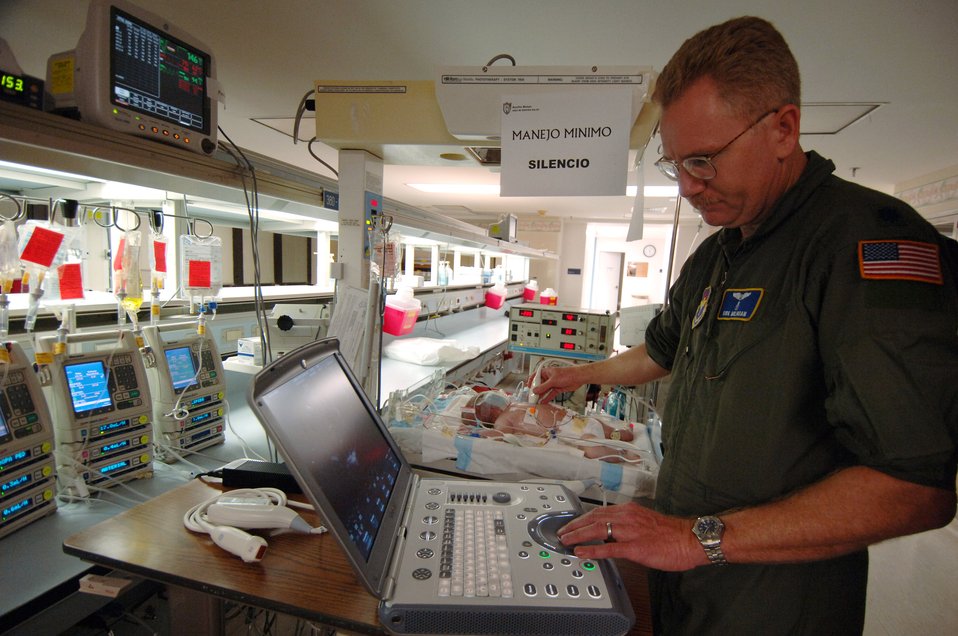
ECMO medical team transports newborn from Puerto Rico

Lt. Col. Kirk Milhoan a Pediatric Cardiologist checks the heart function of 3-day-old Stuart Parker prior to being placed on a transportable Extracorporeal Membrane Oxygenation unit on July 21 in San Juan, Puerto Rico. An ECMO team comprised Air Force and Army medical specialists from the Wilford Hall Medical Center at Lackland Air Force Base, Texas, flew to Puerto Rico to transport Stuart to San Antonio for more advanced care.